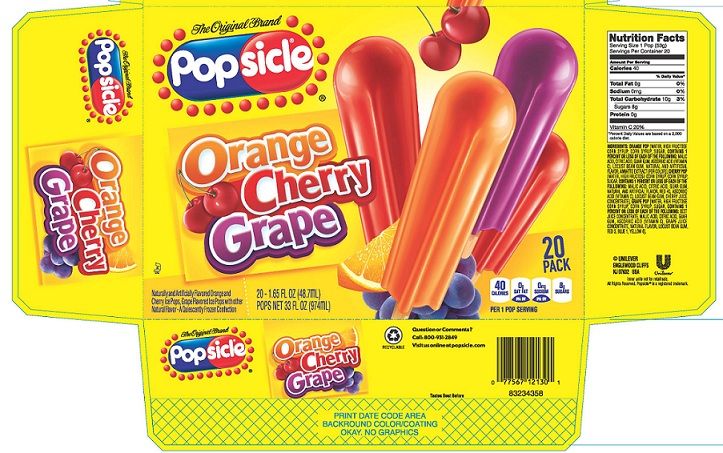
RECALLED – Ice pops

February 28, 2014 – Product Recall – Unilever United States, Inc. Issues Allergy Alert for Limited Number of 20-Count Boxes of Popsicle Orange, Cherry and
Grape Ice Pops Due to Undeclared Milk.